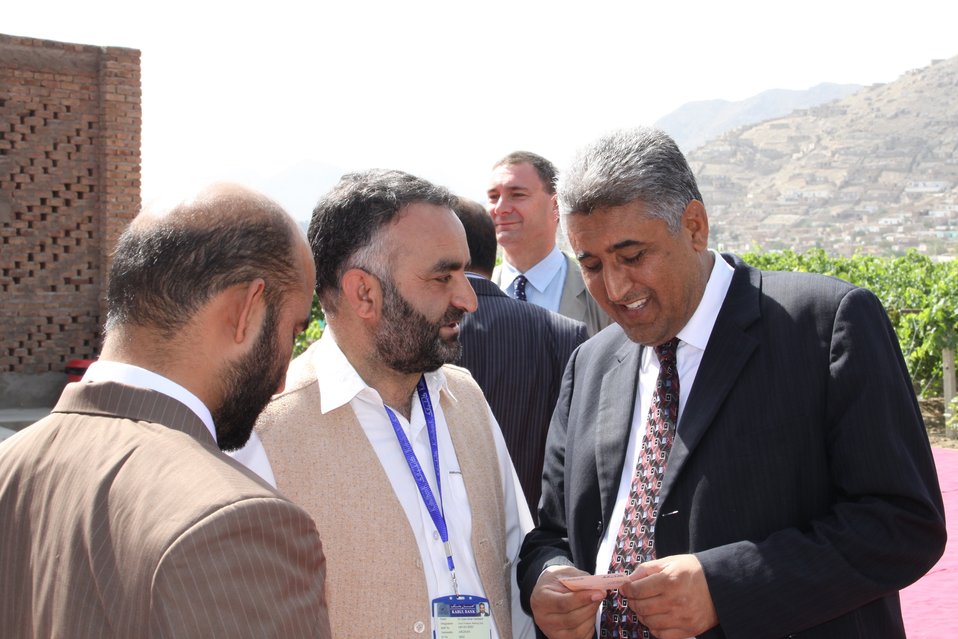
Badam Bagh Farm